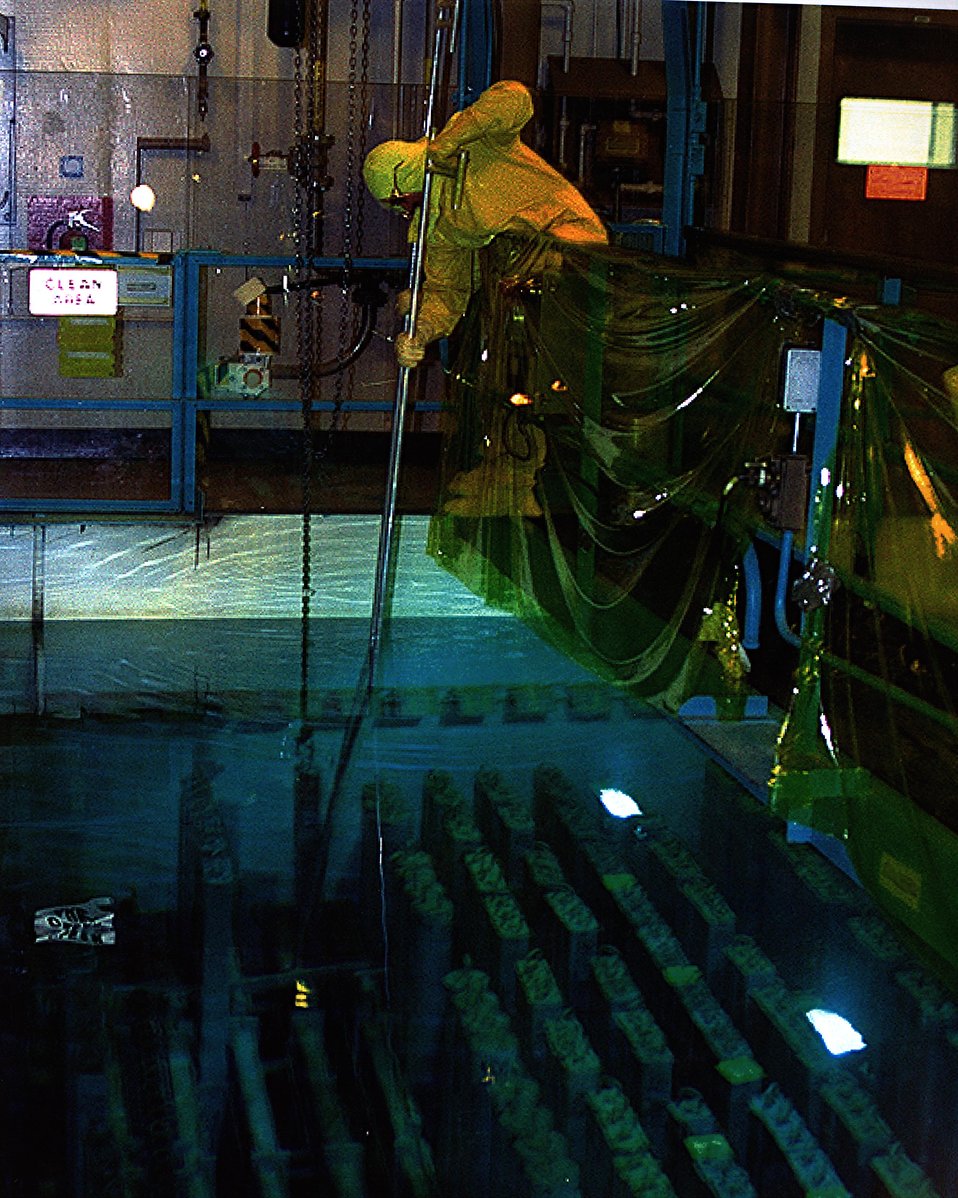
SPENT FUEL RODS UNDERWATER AT RECEIVING BASIN FOR OFFSITE FUELS (RBOF).